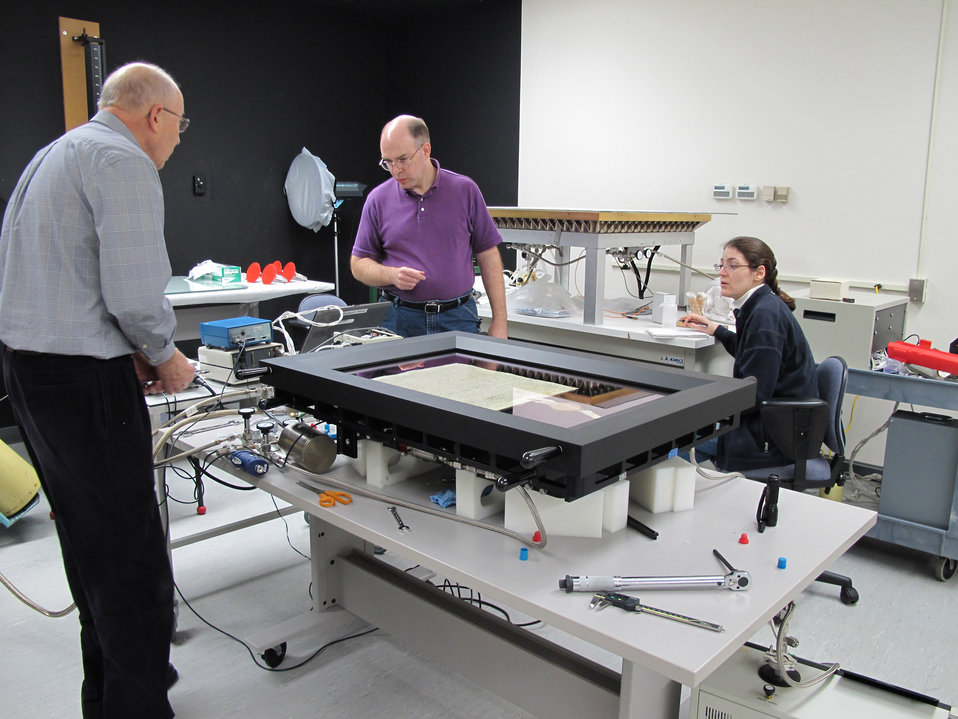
Magna Carta

The Magna Carta rests in its argon-filled NIST encasement at the Archives Conservation lab.